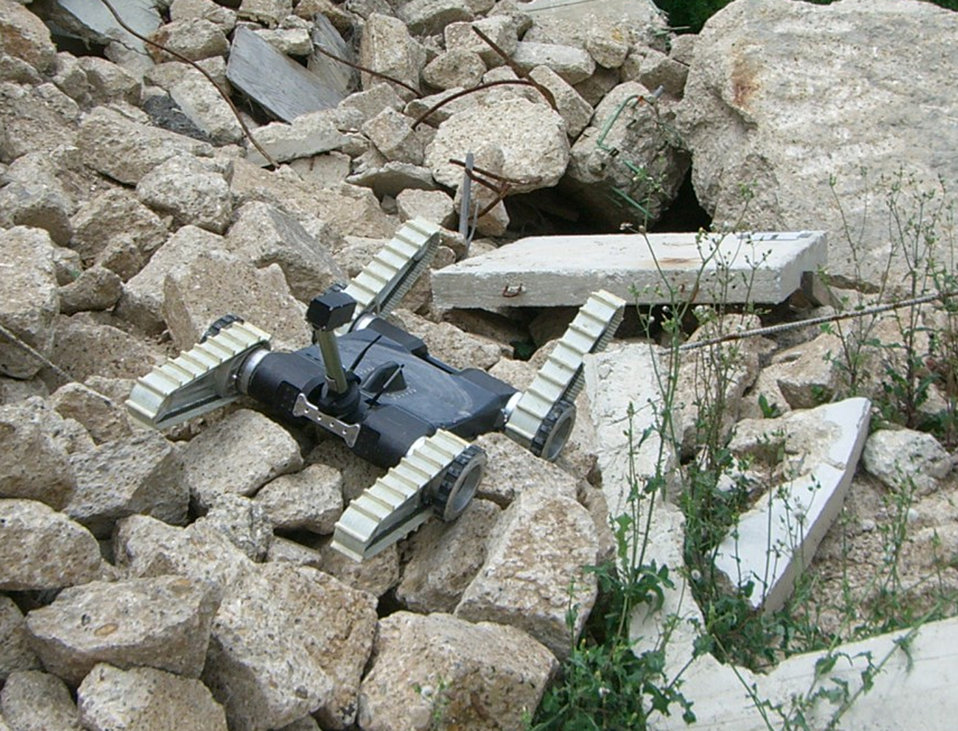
Rescue Robot Tests To Offer Responders High-Tech Help

An urban search and rescue robot moves across a rubble pile in a recent NIST/DHS exercise. The next rescue robot exercise will be held on June 18-22, 2007, at Texas A&M's 'Disaster City' training facility.